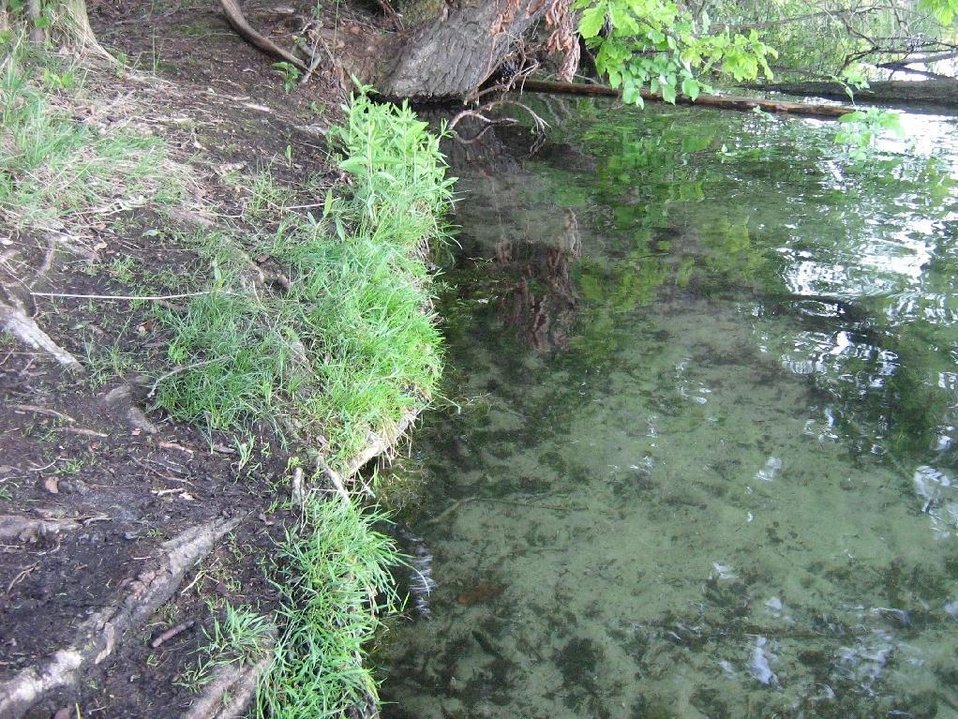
Deutsch: der Sacrower See im Königswald bei Potsdam (Brandenburg).